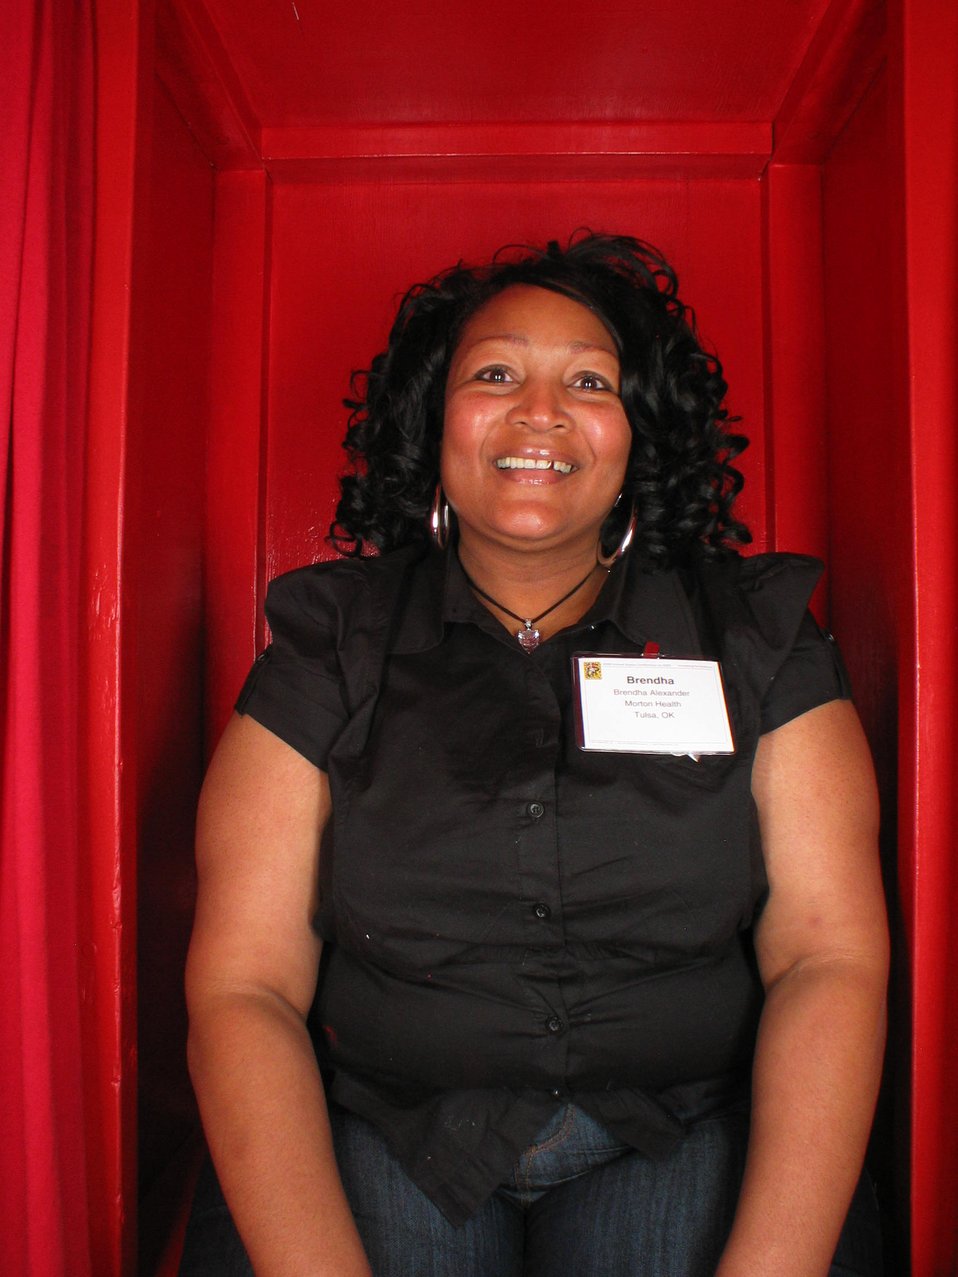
Facing AIDS